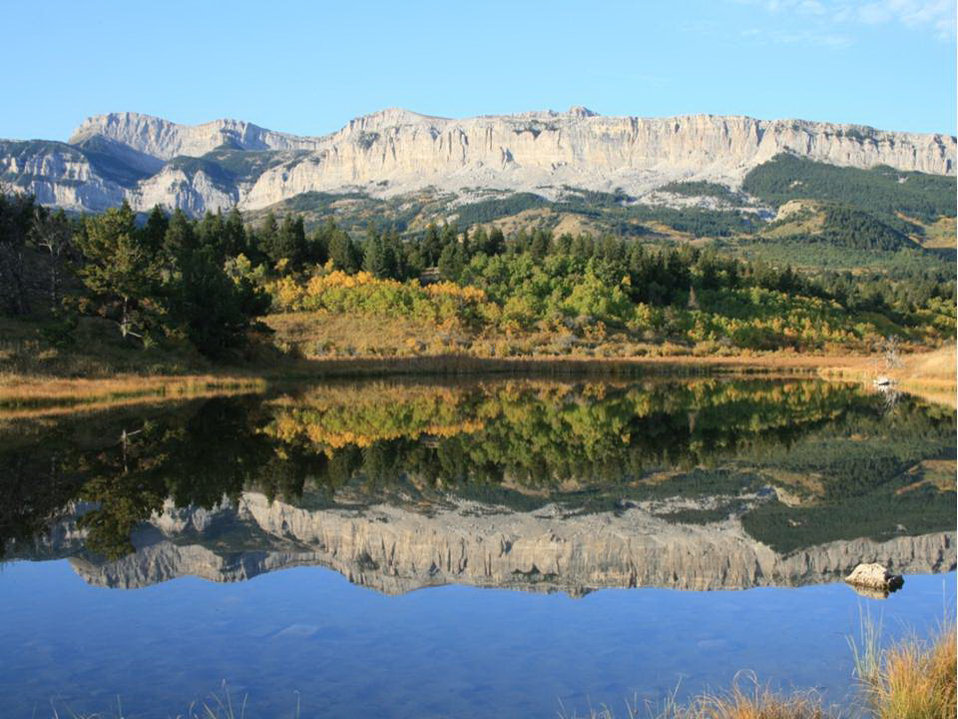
Restored Wetland

Landscapes with incredible wetland resources, such as the Rocky Mountain Front in Montana, are positively impacted by the Partners for Fish and Wildlife program.

Projects like this are funded by the U.S. Fish and Wildlife Service’s Partners for Fish and Wildlife program, whose habitat restoration projects are extraordinary engines for the U.S. economy. Restoration Returns: The Contribution of Partners for Fish and Wildlife Program and Coastal Program Projects to Local U.S. Economies finds that, in working directly with partners to implement vital on-the-ground habitat restoration, Service programs created more than 3,900 jobs in Fiscal Year 2011, generating a total economic stimulus of $327.6 million.

The “restoration economy” is a subset of green jobs that includes such industries as heavy equipment providers and operators, plant nurseries, landscape architects, and construction companies, among other firms.

Download the entire report at: www.fws.gov/home/restoration returns.html.